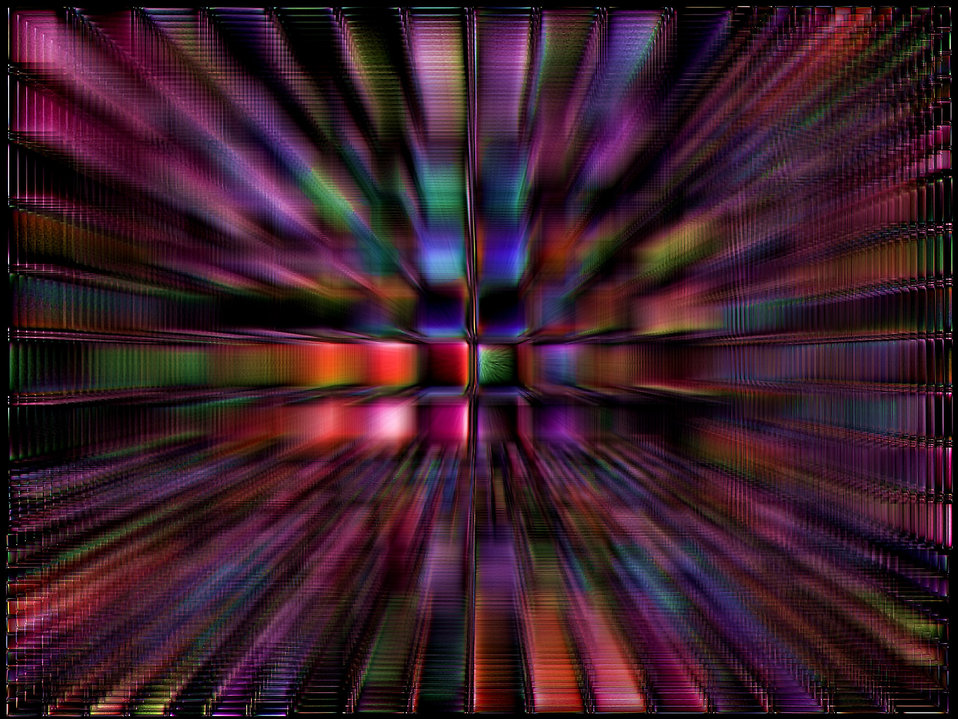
Mosaic zoom

Background.